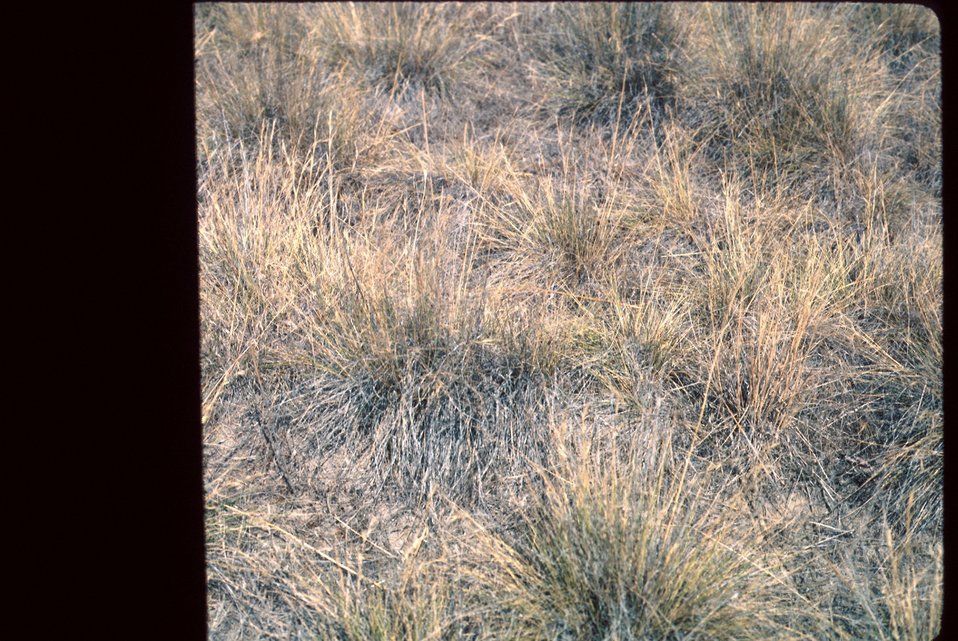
Cheatgrass Bromus tectorum grass, exotic annual